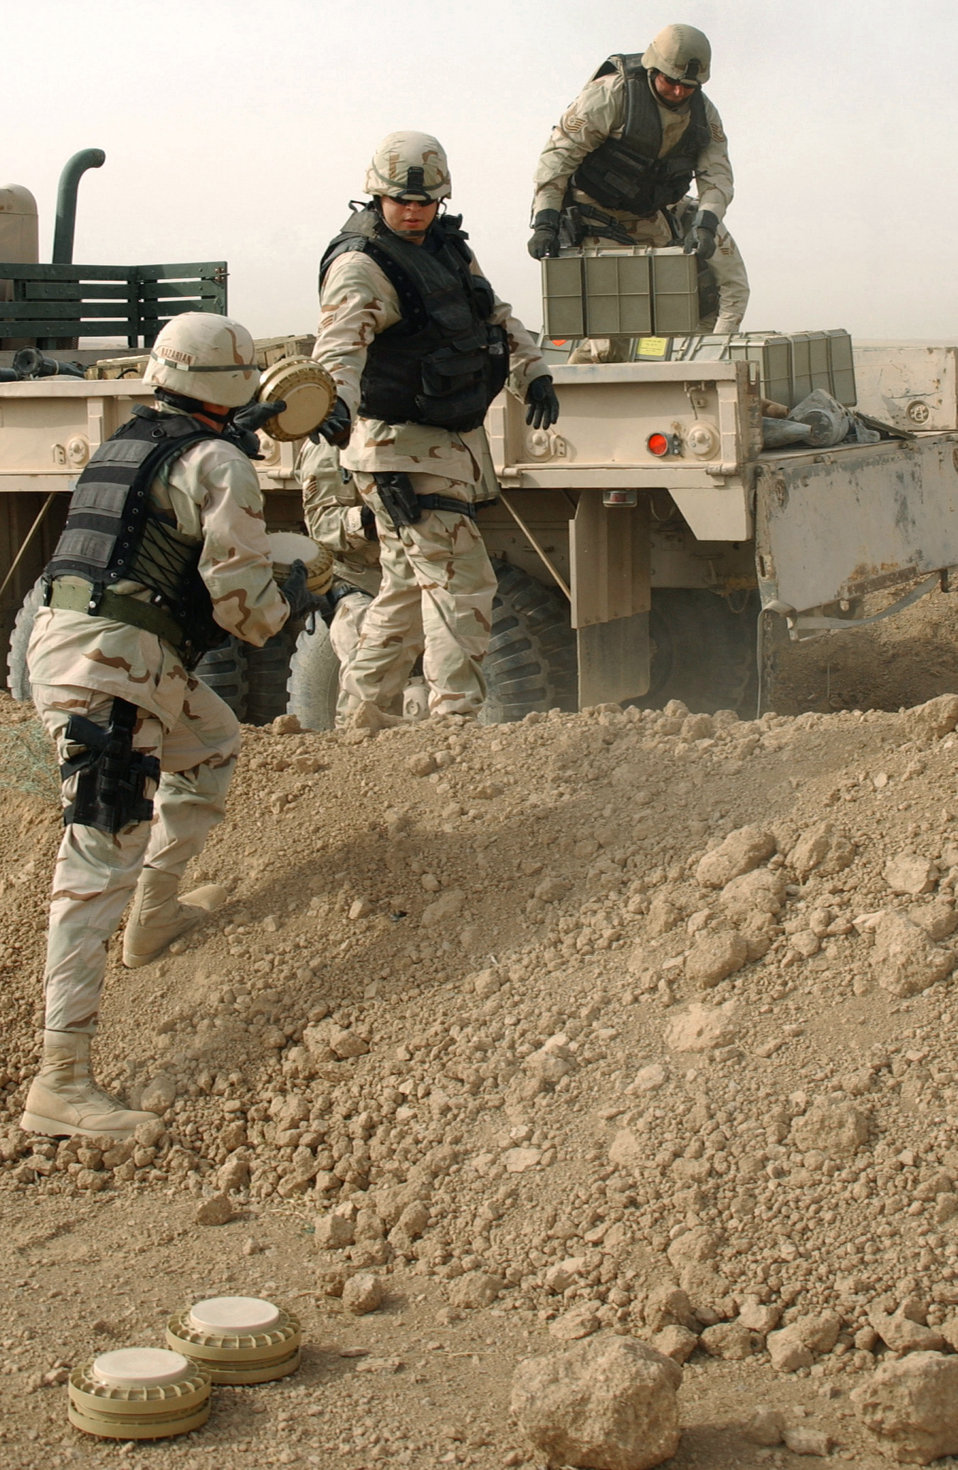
Operation Iraqi Freedom

KIRKUK AIR BASE, Iraq -- A group of Air Force explosive ordnance disposal Airmen from the 506th Expeditionary Civil Engineer Squadron here unloads a truck of live munitions as they prepare to destroy them. Munitions were found throughout the Kirkuk region and destroyed by explosive ordnance disposal Airmen.